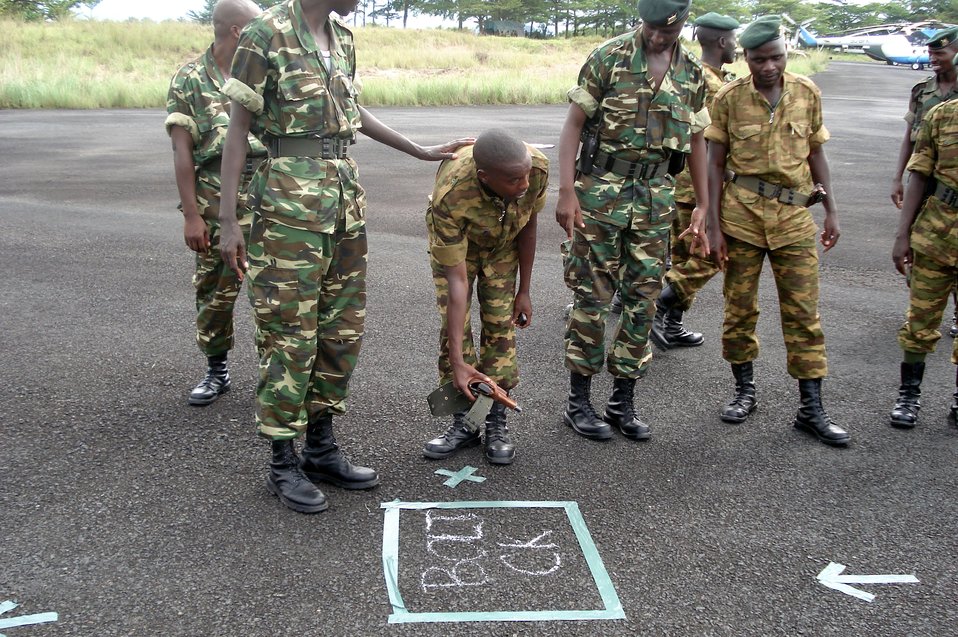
Ramstein Airmen help Burundi military deploy

A Burundi soldier learns how to set up a weapons check for fellow soldiers boarding a Ugandan C-130 en route to Somalia Dec. 13 in Burundi. Airmen of the 86th Contingency Response Group from Ramstein Air Base, Germany, trained the Burundi force throughout December.